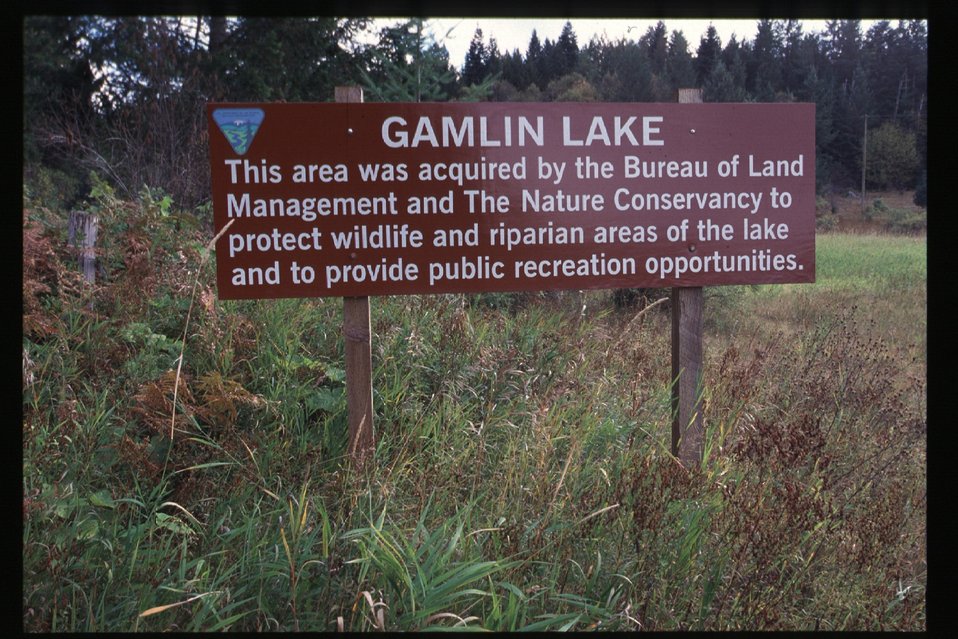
Scenic Gamlin Lake Couer d'Alene Field Office UCSC Upper Columbia Salmon Clearwater District